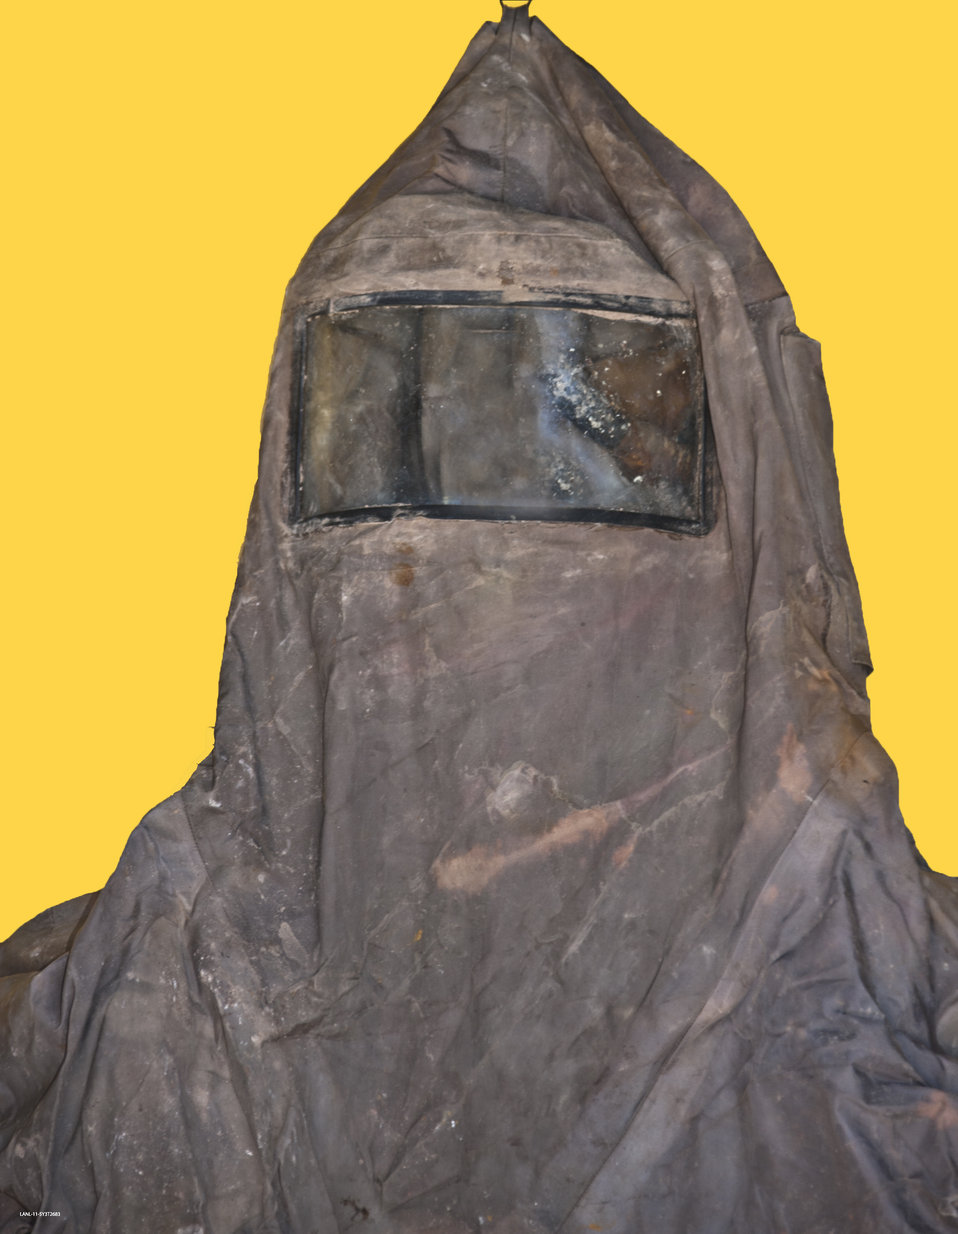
Los Alamos Dig Unveils Items Ranging from Military Trucks to Toothbrush

A radiation protection suit was unearthed at the site.

In a $110 million Recovery Act project at Los Alamos National Laboratory, workers are excavating a waste disposal site known as Material Disposal Area B (MDA-B). Completion of the MDA-B cleanup will reduce EM’s legacy footprint by more than 260,000 square feet.